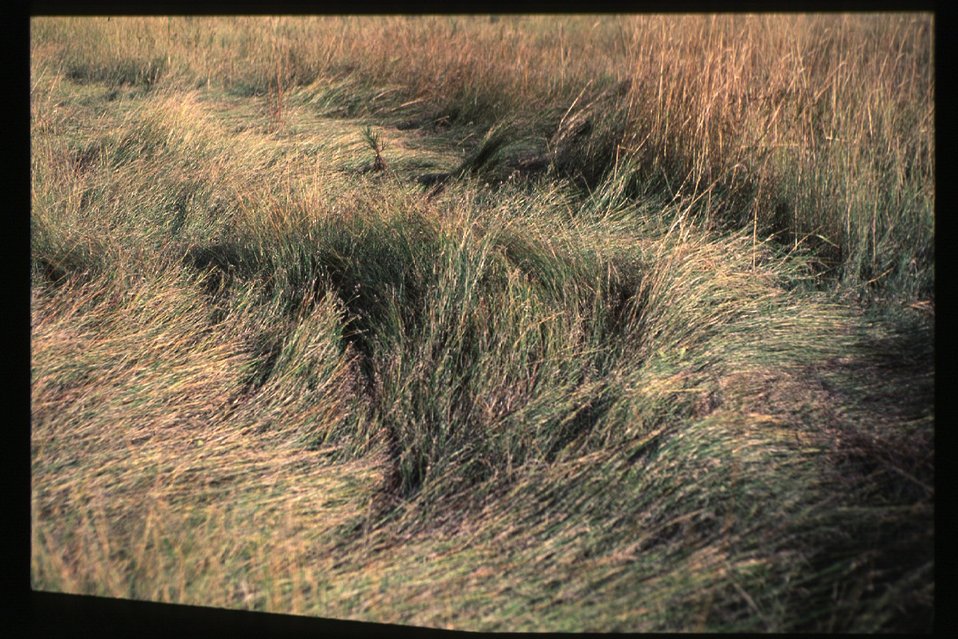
Scenic Blackwell Island grasses Couer d'Alene Field Office UCSC Upper Columbia Salmon Clearwater District